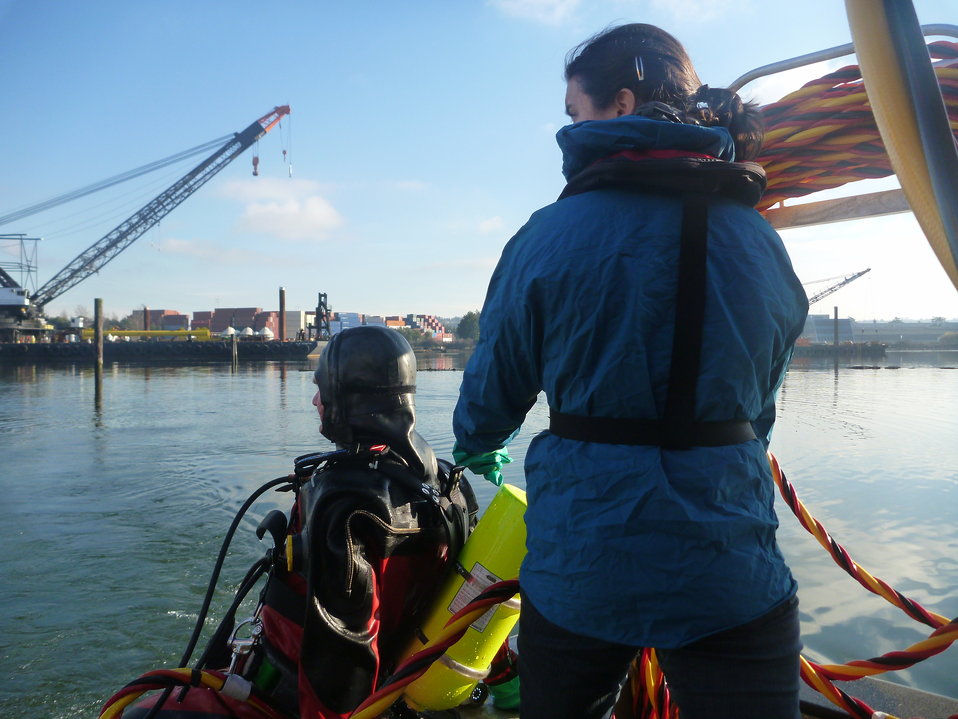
January 15, 2013 - Getting on target, Lower Duwamish River, WA

EPA's Region 10 dive unit was asked to help plan and execute the deployment and retrieval of passive sampling devices in the Lower Duwamish River. This sampling effort, that began in November of 2012, will help scientists better understand the bioavailability of PCBs on the river bottom.

A photo from the deployment effort: www.flickr.com/photos/usepagov/8246528622/in/set-72157629...

A century of heavy industrial use has left the waterway contaminated with toxic chemicals from many sources – industries along its banks, stormwater pipes, and runoff from upland activities, streets and roads. Pollution in the river sediments includes polychlorinated biphenyls (PCBs), dioxins/furans, carcinogenic polycyclic aromatic hydrocarbons (cPAHs), and arsenic.

Many of these chemicals stay in the environment for a long time, and have built up to unsafe levels in resident fish and shellfish. Because of contamination, state and local health departments warn against eating crab, shellfish, or bottom-feeding fish from the Lower Duwamish River. Migratory salmon are considered safe as they move quickly through the waterway into the Green River watershed.

Lower Duwamish Waterway Superfund Site

To find out more about EPA diving nationally, visit: www.facebook.com/EPAdivers